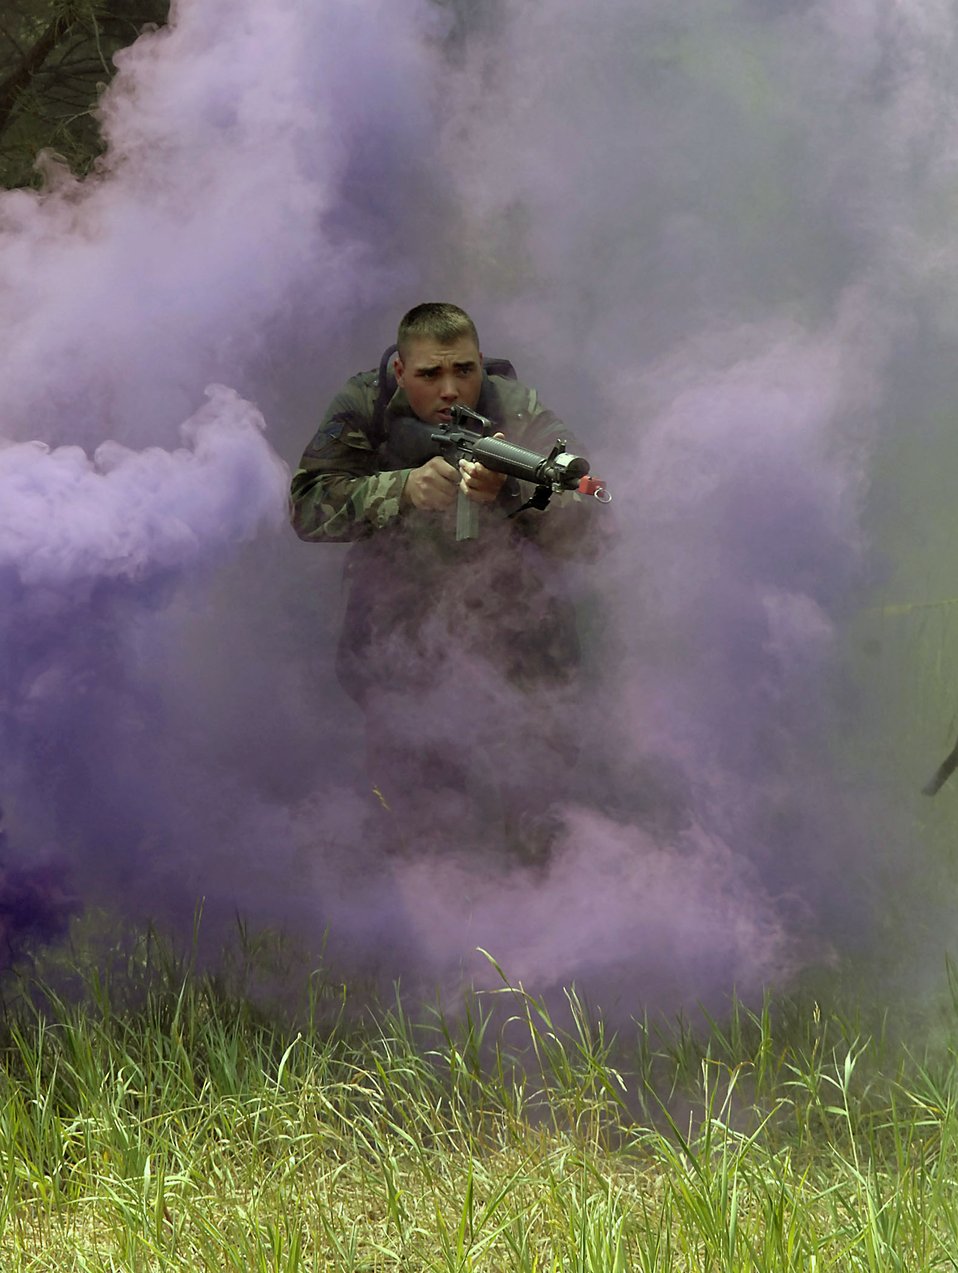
Global Engagement teaches leadership, base deployment

Staff Sgt. Brian Geike runs through cover smoke while attacking defensive firing positions manned by U.S. Air Force Academy cadets during the Global Engagement course July 11 at the Academy in Colorado. The purpose of Global Engagement is to lay the foundation of attitudes, knowledge and skills necessary to lead, fight, and win in a dynamic and diverse global environment. Sergeant Geike is a security forces instructor from Malmstrom Air Force Base, Mont.